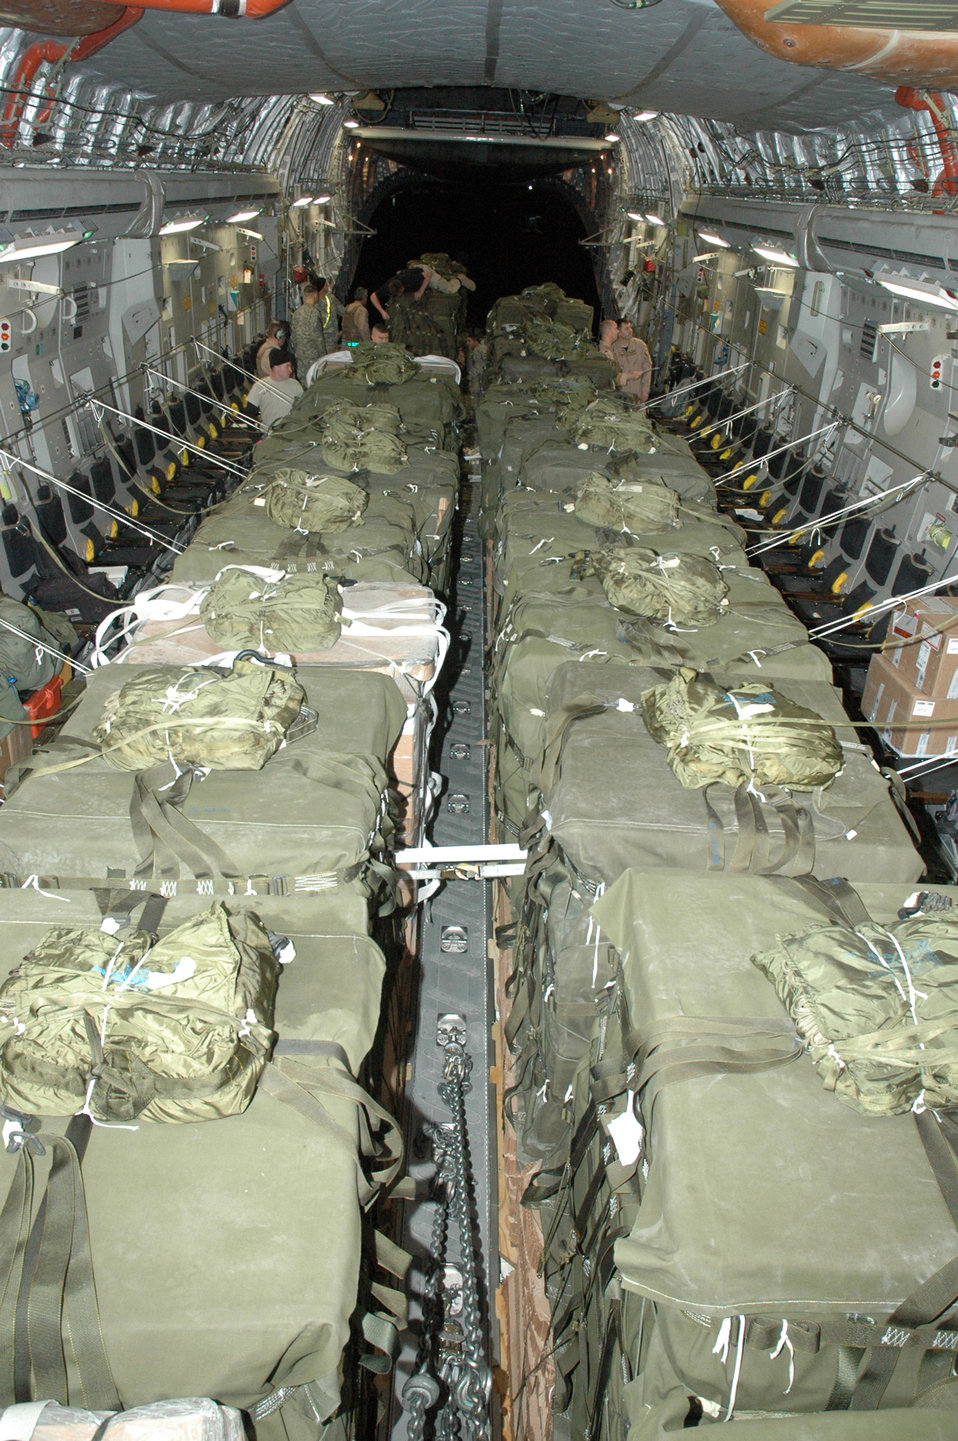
Delivering Bombs, Beans, Bullets

An 816th Expeditionary Airlift Squadron aircrew works with Army personnel in Afghanistan to rig a C-17 for an airdrop mission in February. The squadron has seen an increase in airdop missions during its rotation.